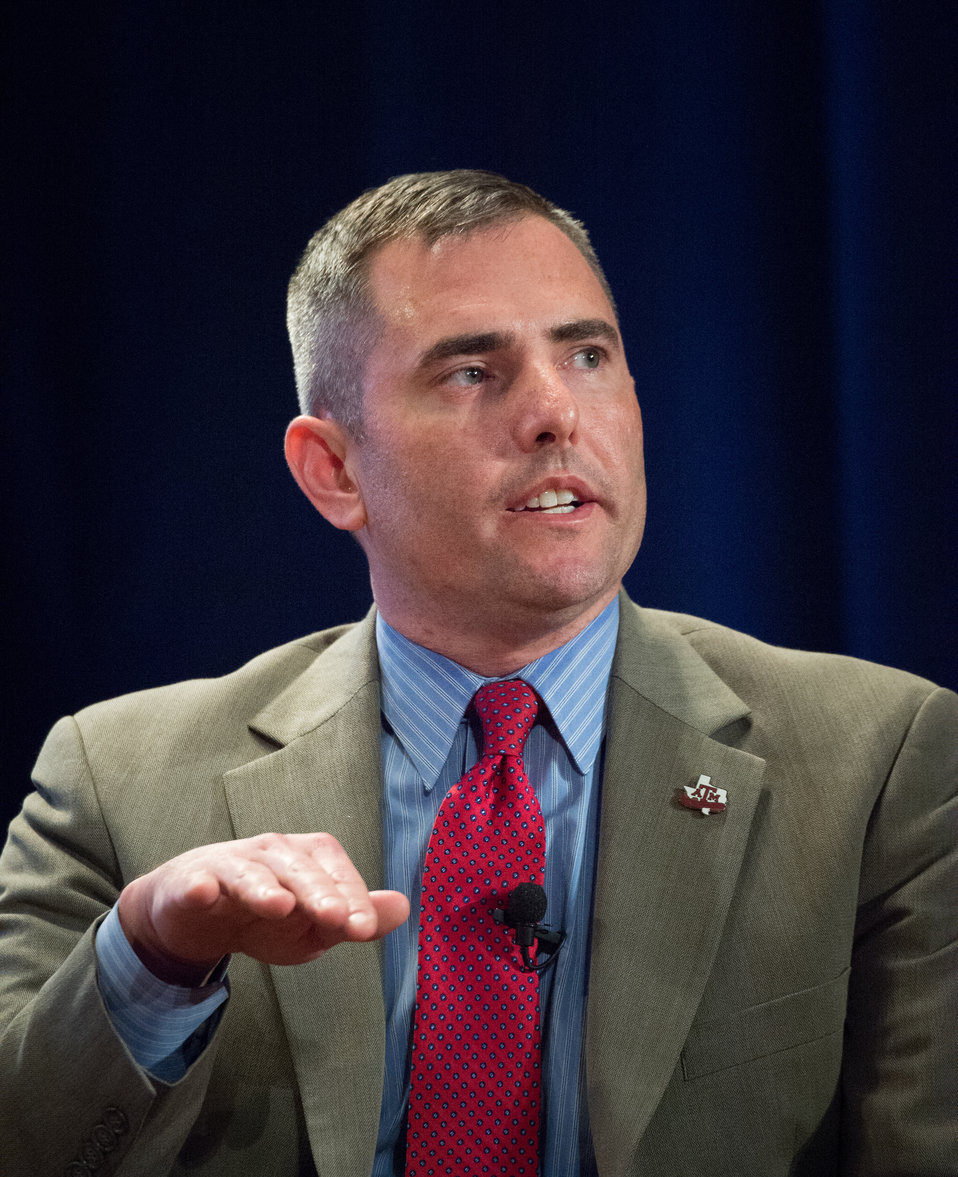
Texas A and M University Graduate Student Sean Thompson, participates in the discussion panel titled ';I am Dr. Borlaug's Vision - I Can Make a Difference'; during the Borlaug Symposium commemorating the late Dr. Norman E. Borlaug's 100th Birthday hosted by the U. S. Department of Agriculture (USDA) in the Jefferson Auditorium of USDA in Washington, D.C. on Tuesday, Mar. 25, 2014. The symposium highlighted current efforts addressing global hunger.